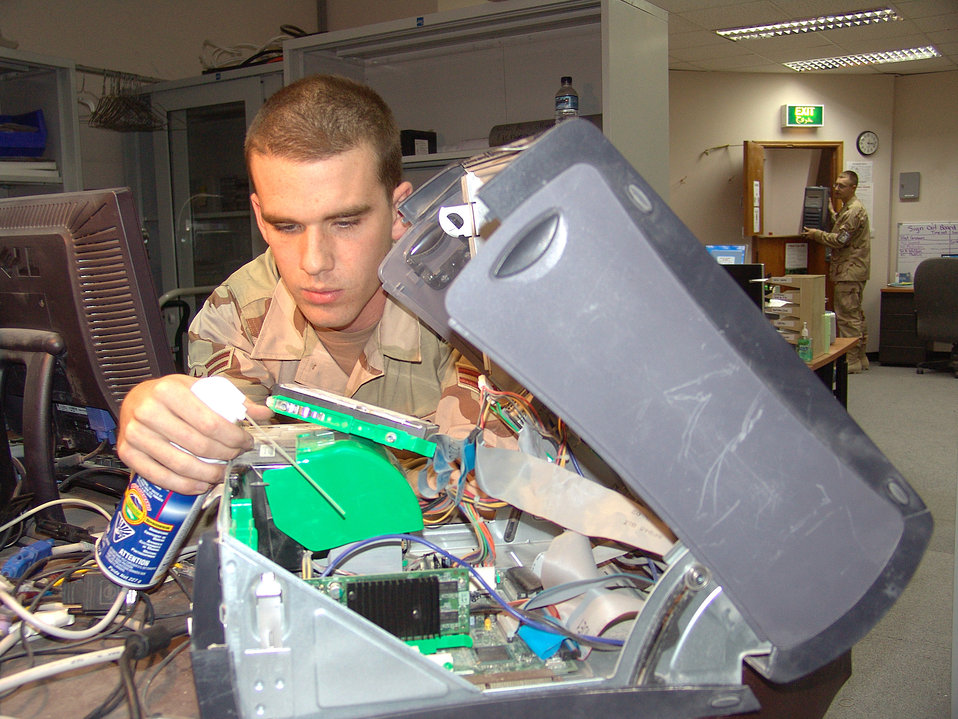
Operation IRAQI FREEDOM

SOUTHWEST ASIA -- Airman 1st Class Sean McGuigan removes dust from a computer before replacing a bad hard drive. Airman McGuigan is deployed to the 386th Expeditionary Communications Squadron from Elmendorf Air Force Base, Alaska. The 386th ECS is responsible for the maintenance of more than 2000 small computers.